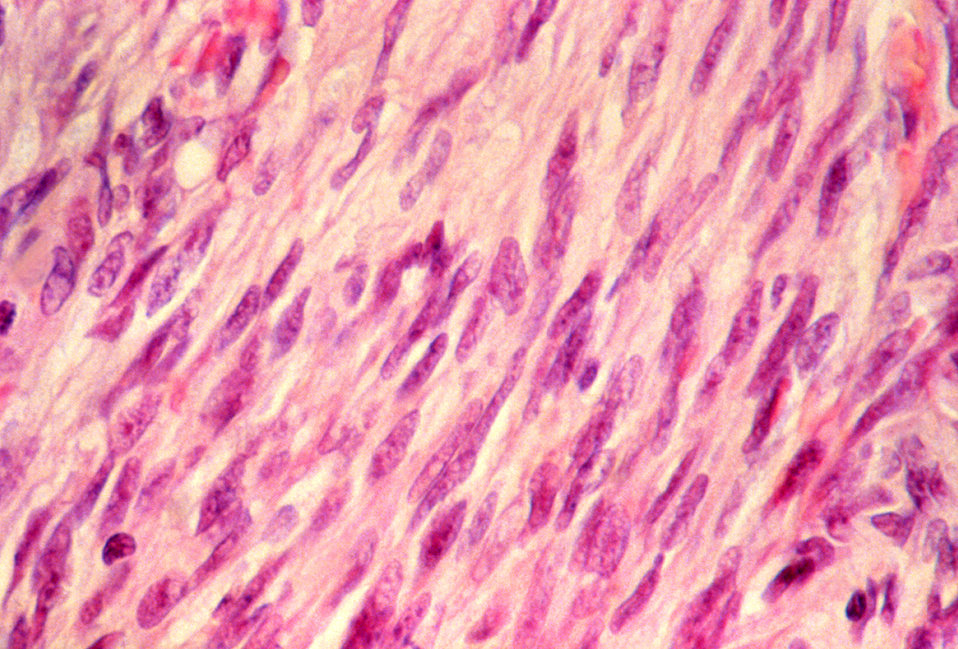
This highly magnified micrograph depicts the usual histopathologic changes found in a Kaposi's sarcoma lesion.